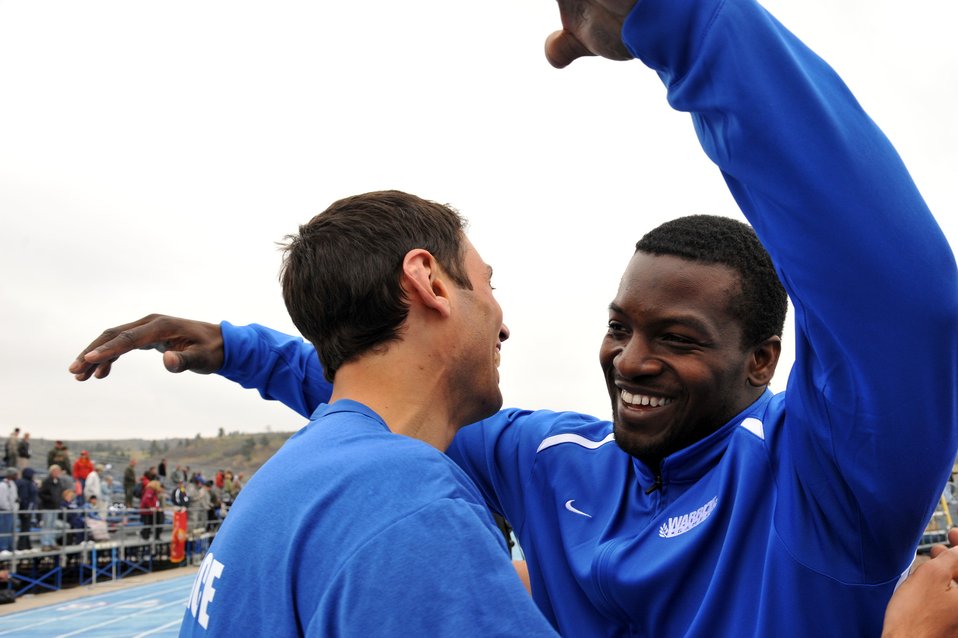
Warrior Games AF track and field

Air Force team member Matt Sanders (right) hugs teammate Adam Tanverdi after he completed his track event during the Warrior Games at the U.S. Air Force Academy track in Colorado Springs, Colo., May 14, 2010.